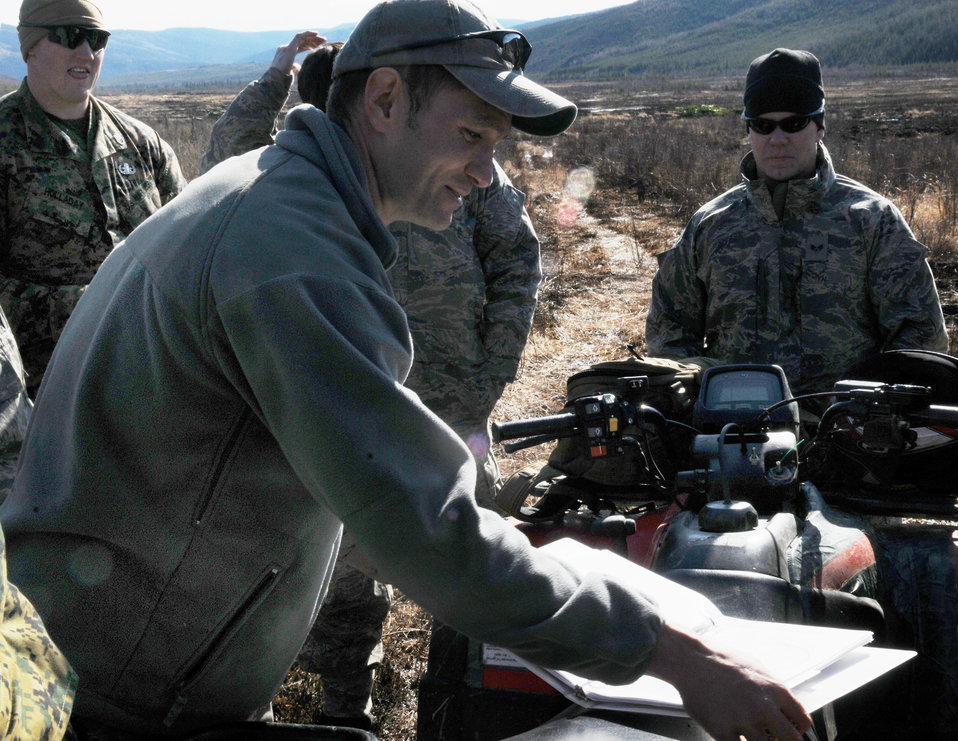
Servicemembers clear Alaskan bombing range

Senior Master Sgt. Albert Schneider gives a quick brief May 14 at the Pacific Alaskan Range Complex. The Airmen and Marines are clearing the range of live munitions after several Red Flag operations. Sergeant Schneider is with the 354th Civil Engineering Squadron Explosive Ordnance Flight at Eielson Air Force Base, Alaska.